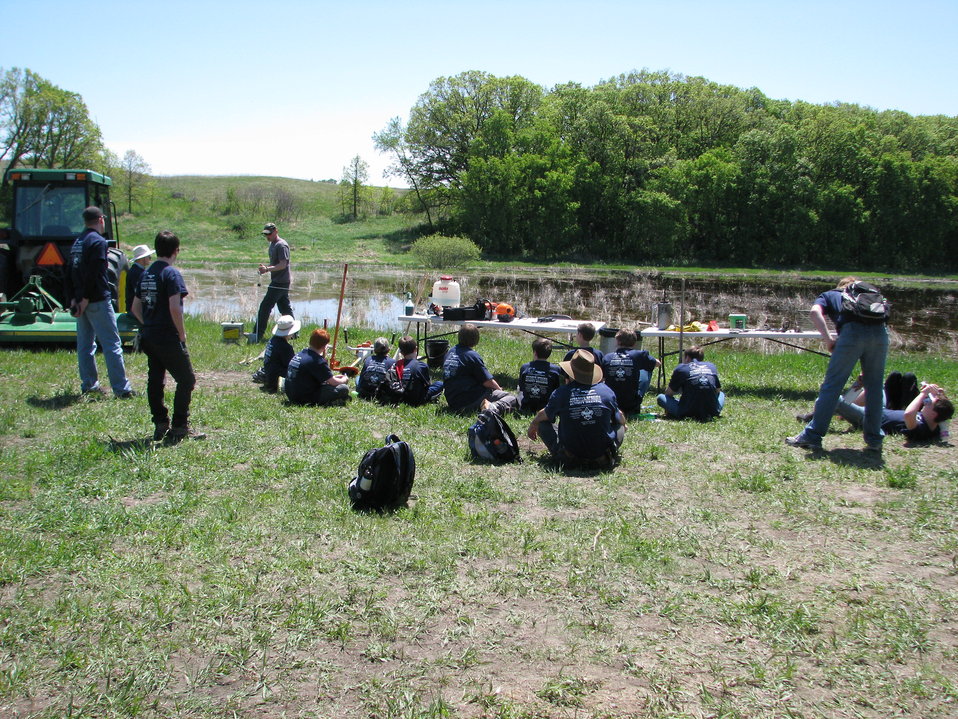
Troops Learn about Invasive Species